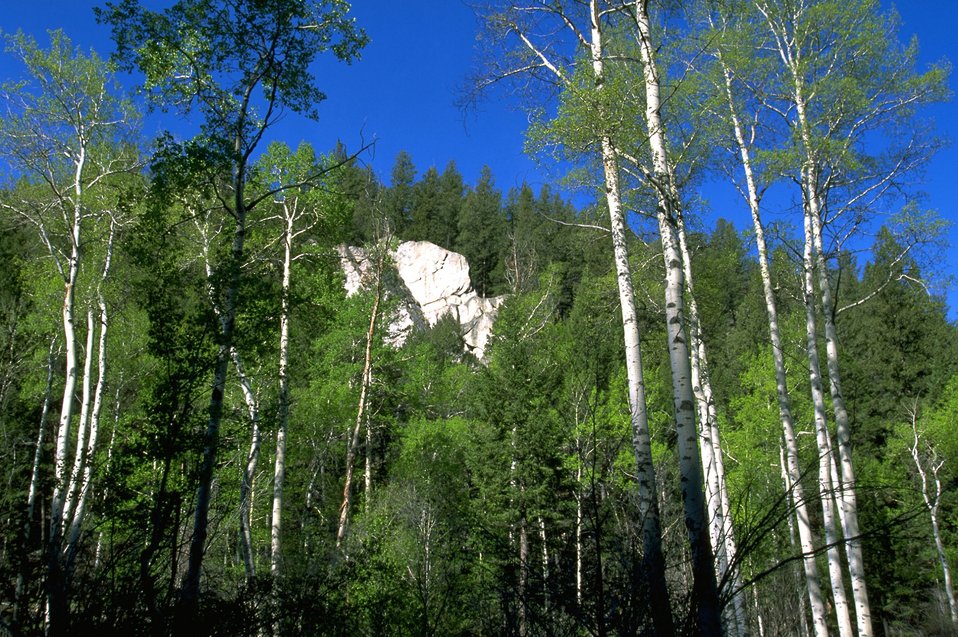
Rock formation surrounded by Aspen